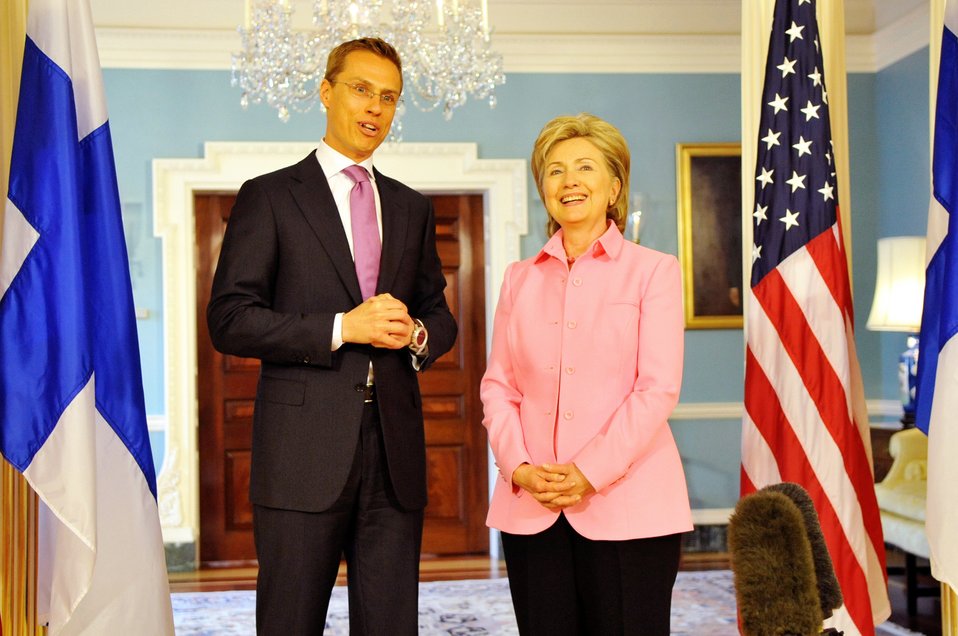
Secretary Clinton Meets With Finnish Foreign MInister

U.S. Secretary of State Hillary Rodham Clinton hosts a bilateral meeting with Finnish Foreign Minister Cai-Goran Alexander Stubb in the Treaty Room of the U.S. Department of State in Washington, DC May 11, 2009.